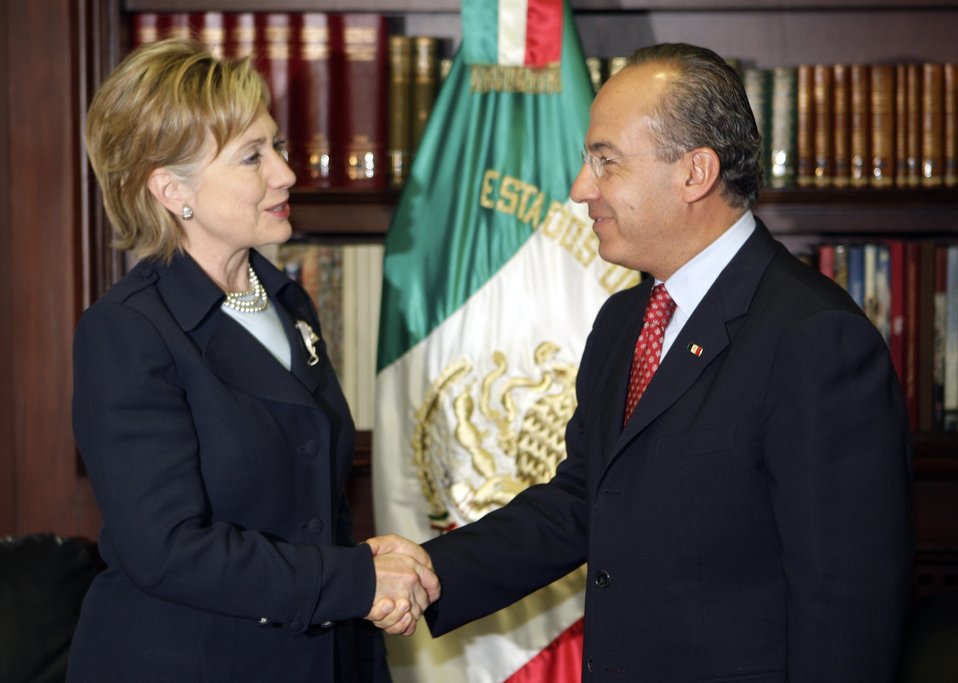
Secretary Clinton Meets Mexican President

Mexican President Felipe Calderon greets U.S. Secretary of State Hillary Clinton inside Los Pinos presidential residence in Mexico City, March 25, 2009. Clinton is in Mexico for a two-day visit.